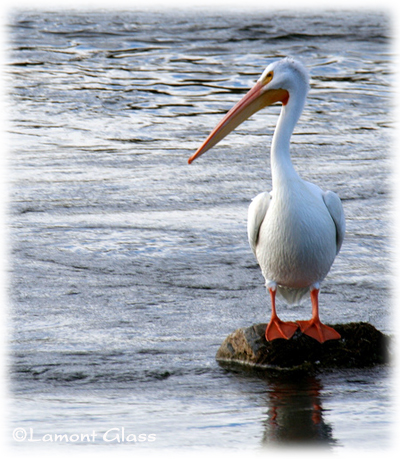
White Pelican - McNary NWR

Refuge ponds and backwaters serve as year-round resting, nesting and feeding areas for many species of wildlife at McNary NWR.